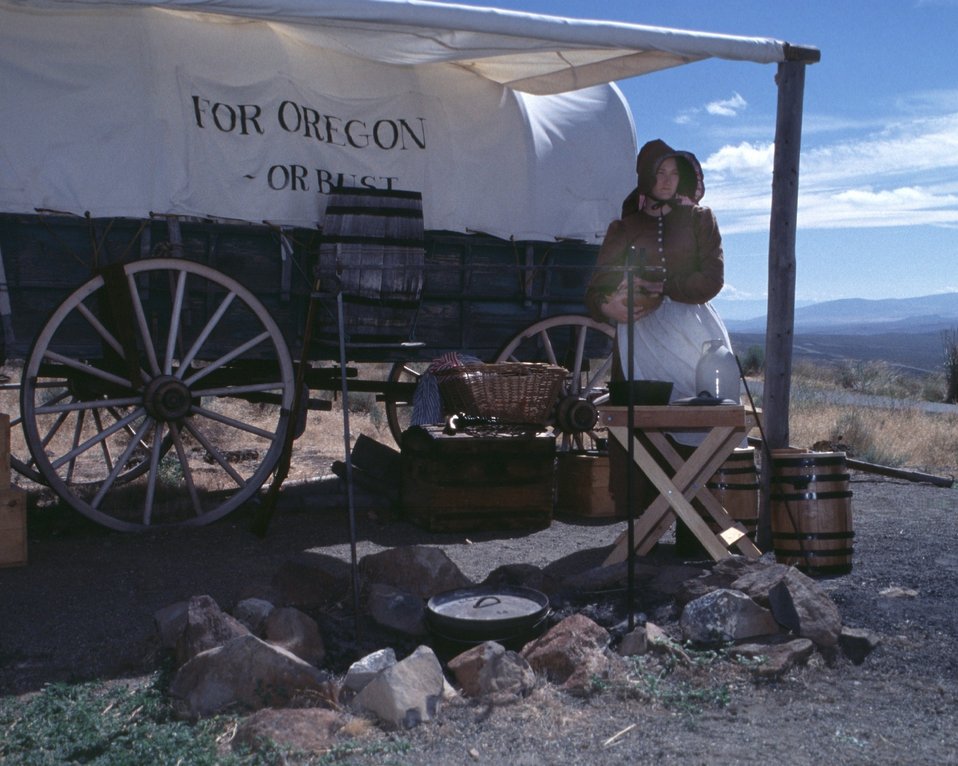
Rebecca Crow portrays a pioneer woman cooking on the Oregon Trail.